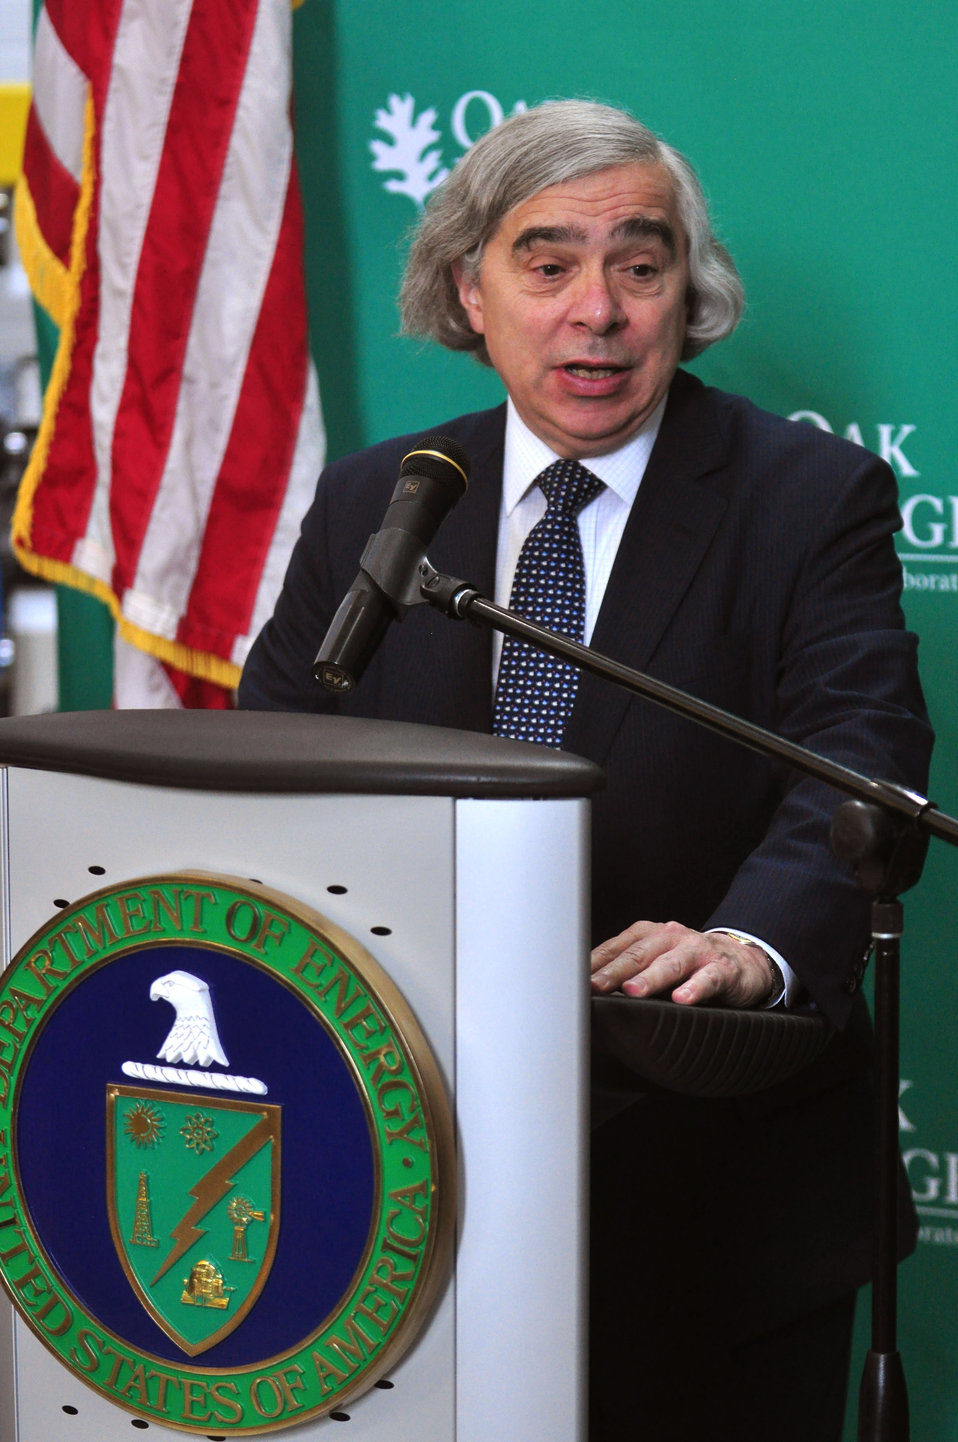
DOE Secretary of Energy Ernest Moniz in Oak Ridge

13-064 DOE photo Lynn Freeny 6-20-2013 Oak Ridge Tennessee